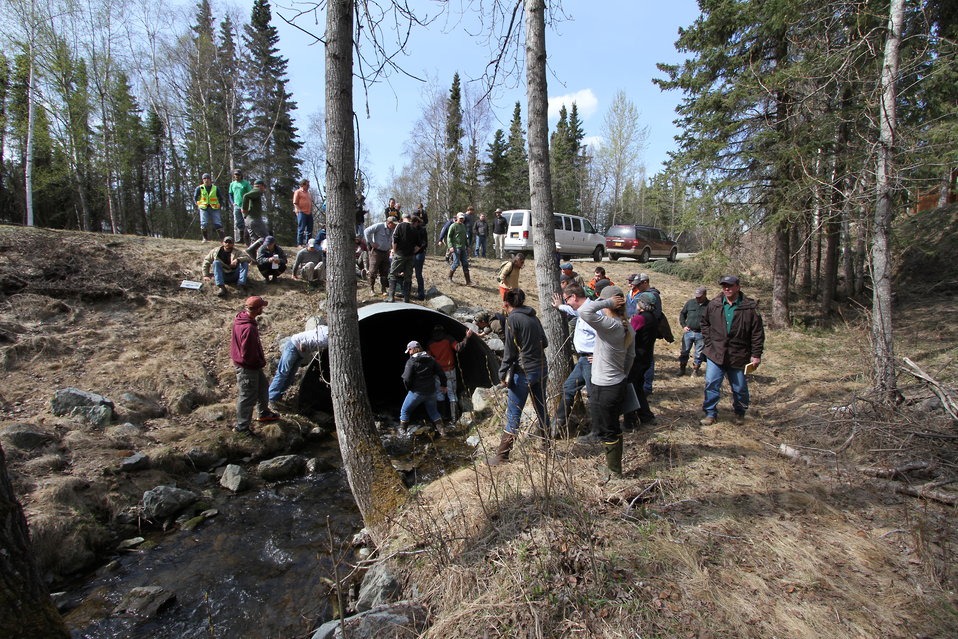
Fish Passage Workshop May 2014

Workshop participants gather at a fish-friendly crossing in Anchorage, Alaska. Workshop hosts/organizers included the U.S. Forest Service, U.S. Fish and Wildlife Service, and the Alaska Department of Fish and Game. USFWS/Katrina Mueller